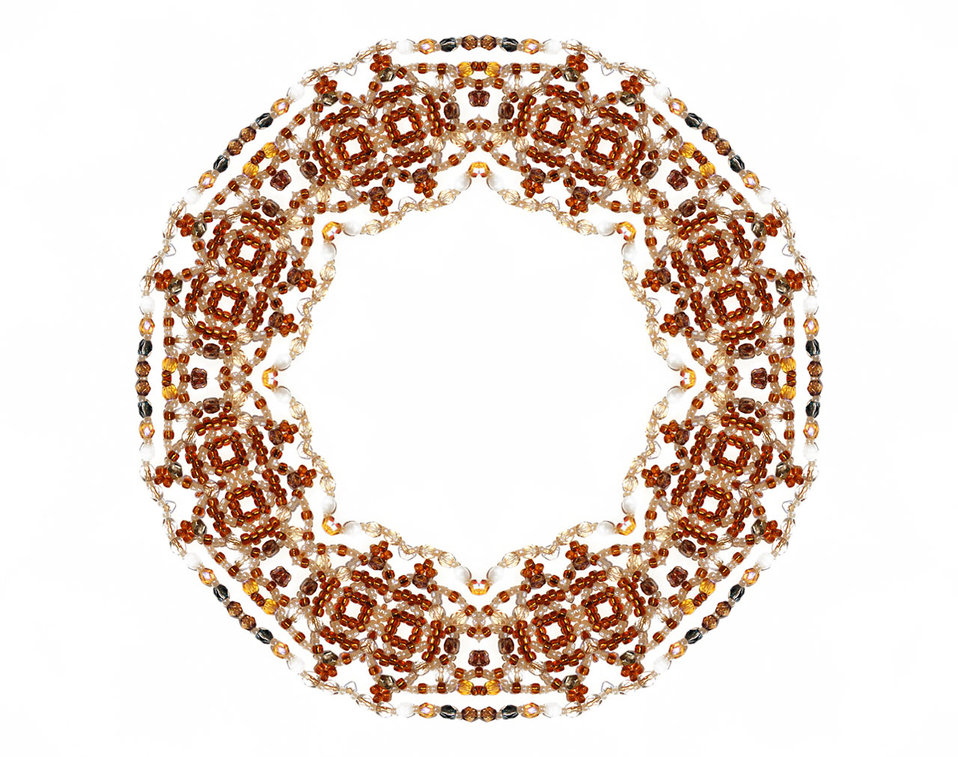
Amber beads round frame

Beaded frame in warm colours - modified photo of real handmade jewellery.